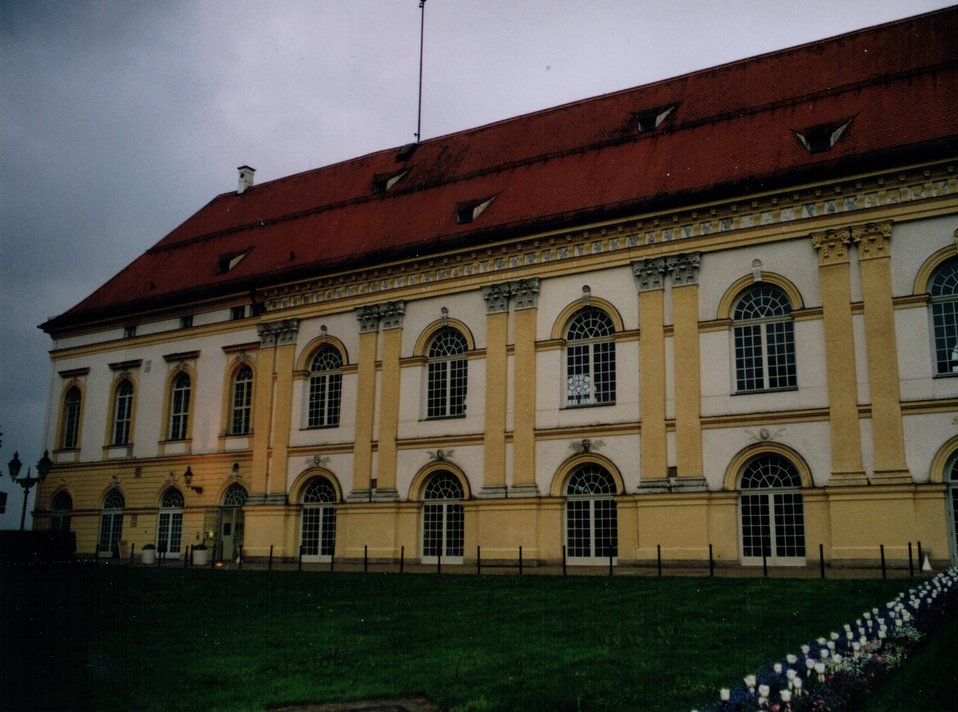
040522 dah